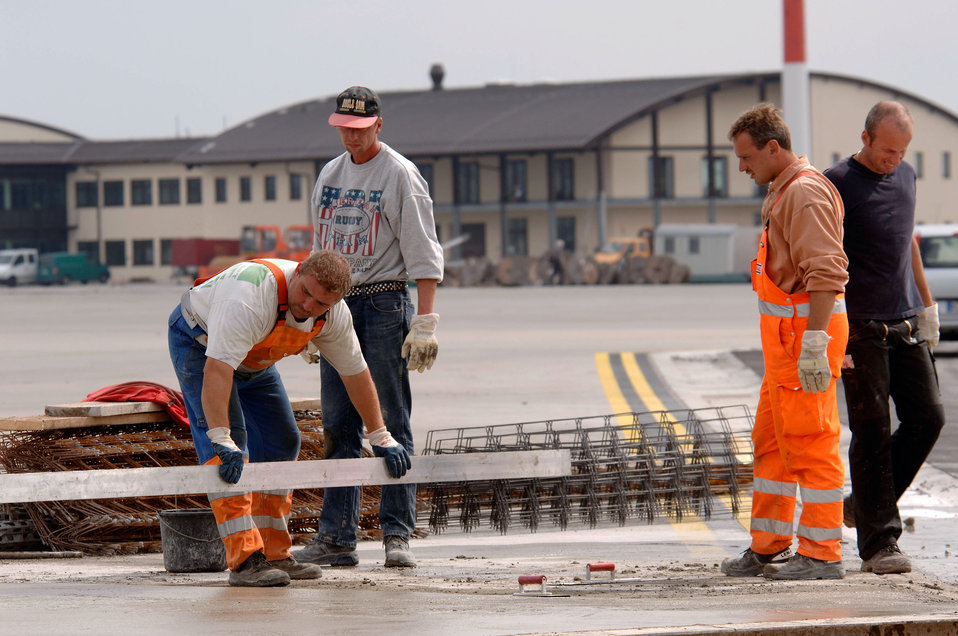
Spangdahlem's new airlift mission has room for expansion

SPANGDAHLEM AIR BASE, Germany -- German contract construction workers replace a damaged concrete slab on the new Air Mobility Command ramp here. The building in the back is the new home of the 726th Air Mobility Squadron, which is moving to the base as part of the Rhein-Main Transition Program. The squadron will begin airlift support operations Oct. 1.